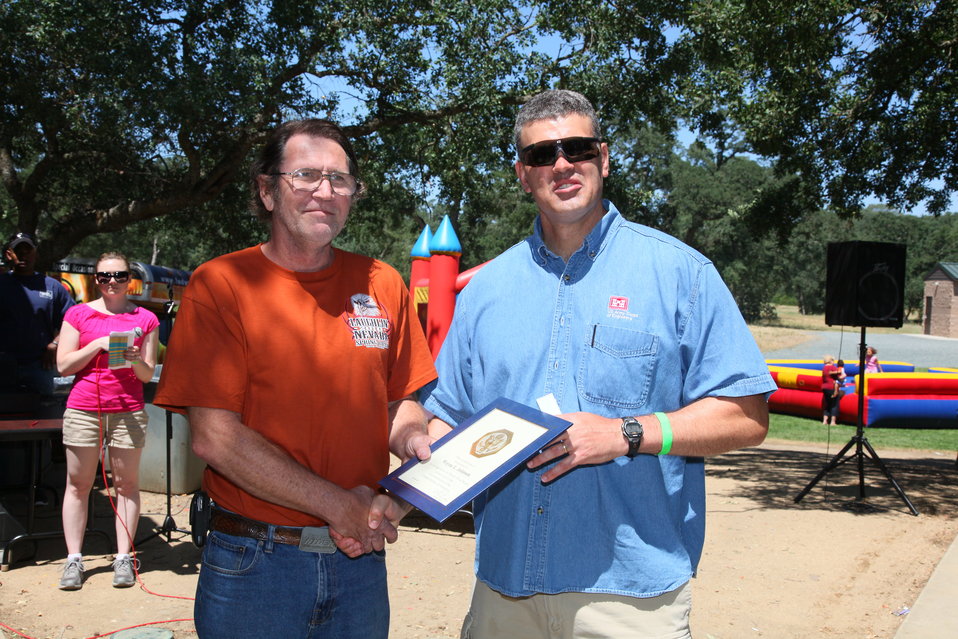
2011 Annual Picnic